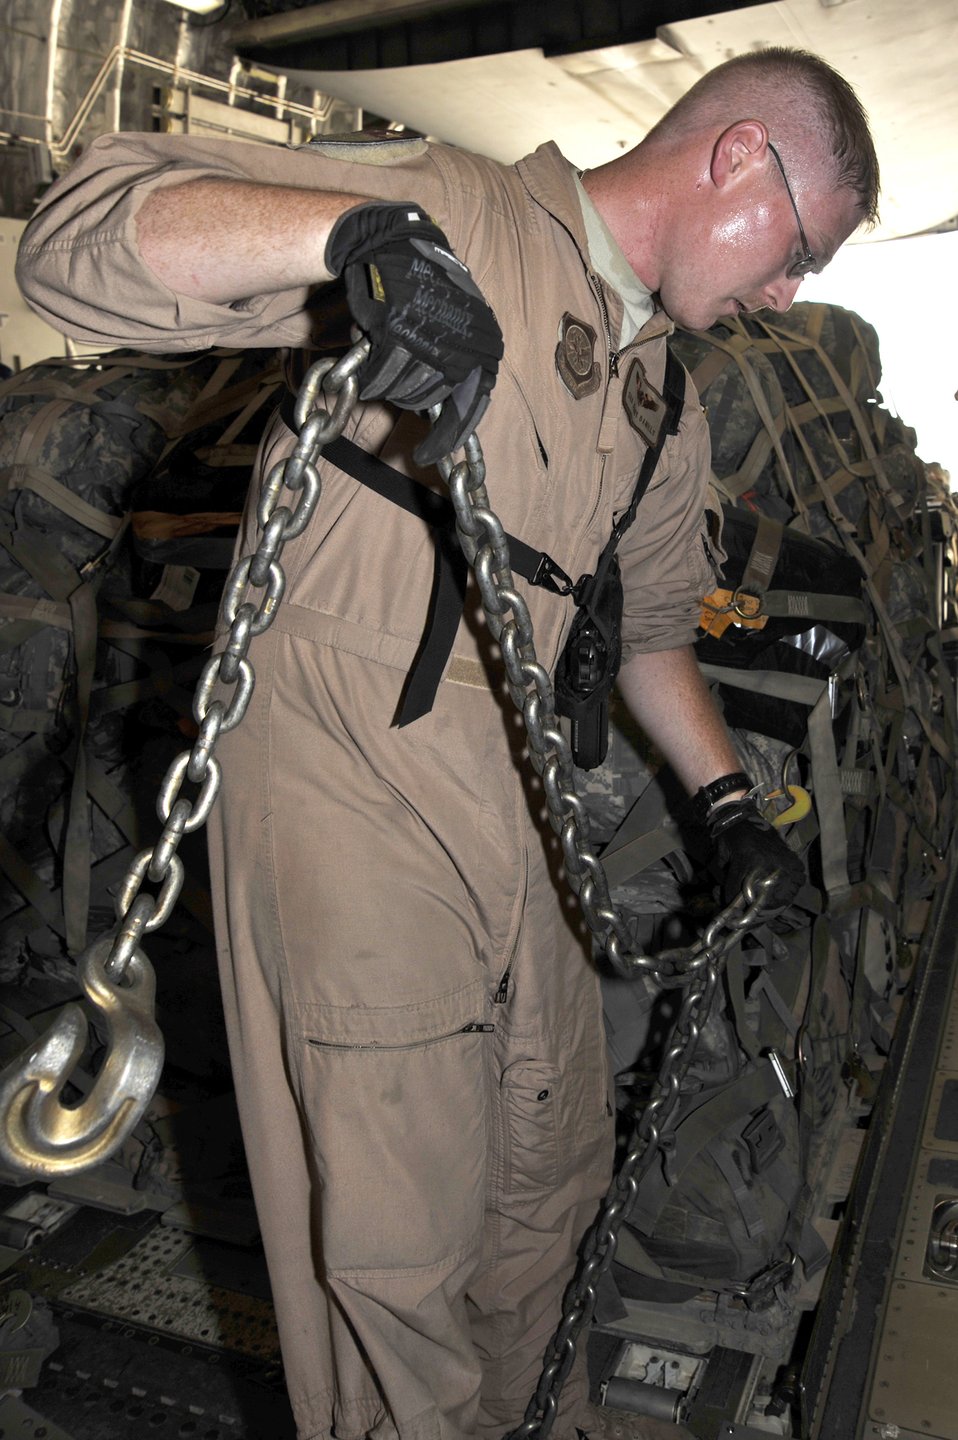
Keeping it in place

Senior Airman Jerry Daniels, a loadmaster with the 817th Expeditionary Airlift Squadron, connects supplemental restraints to palletized baggage on a C-17 Globemaster III July 10, 2010, at Sather Air Base, Iraq. The Air Force is playing a vital role in the Iraq drawdown to 50,000 troops by Aug. 31, 2010.